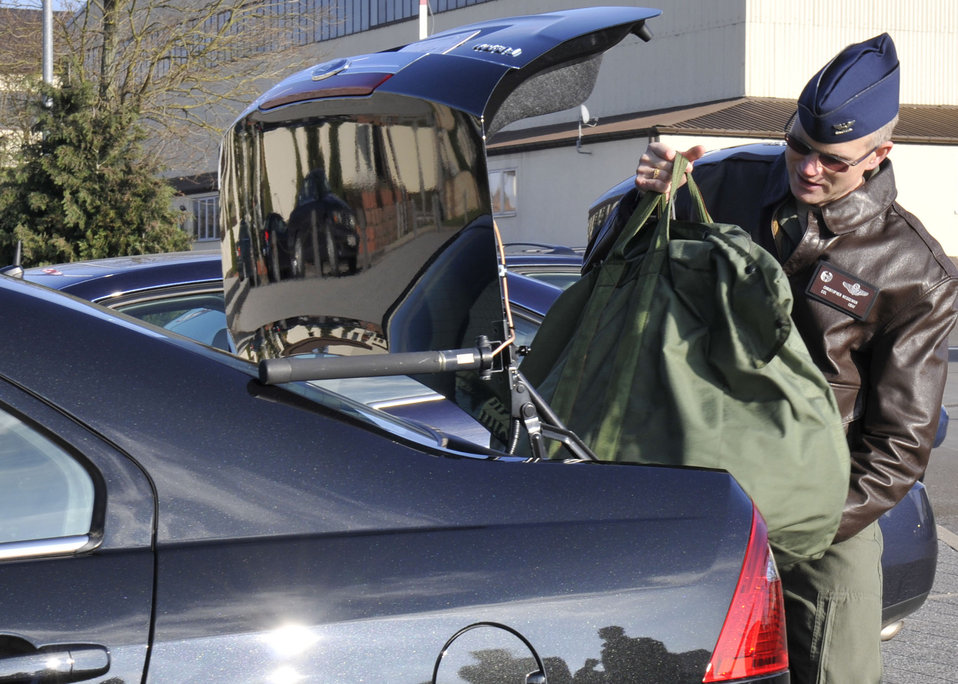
Spangdahlem AB's first hybrid

Col. Christopher Weggemen places his belongings in his hybrid Jan. 21, 2011, at Spangdahlem Air Base, Germany. Colonel Weggemen is the first person to drive a hybrid in the fleet at Spangdahlem AB, as a step toward the goal to comply with an executive order requiring a 34 percent reduction in greenhouse gas emissions by 2020 and 20 percent reduction of petroleum use by 2015. Colonel Weggemen is the 52nd Fighter Wing commander.